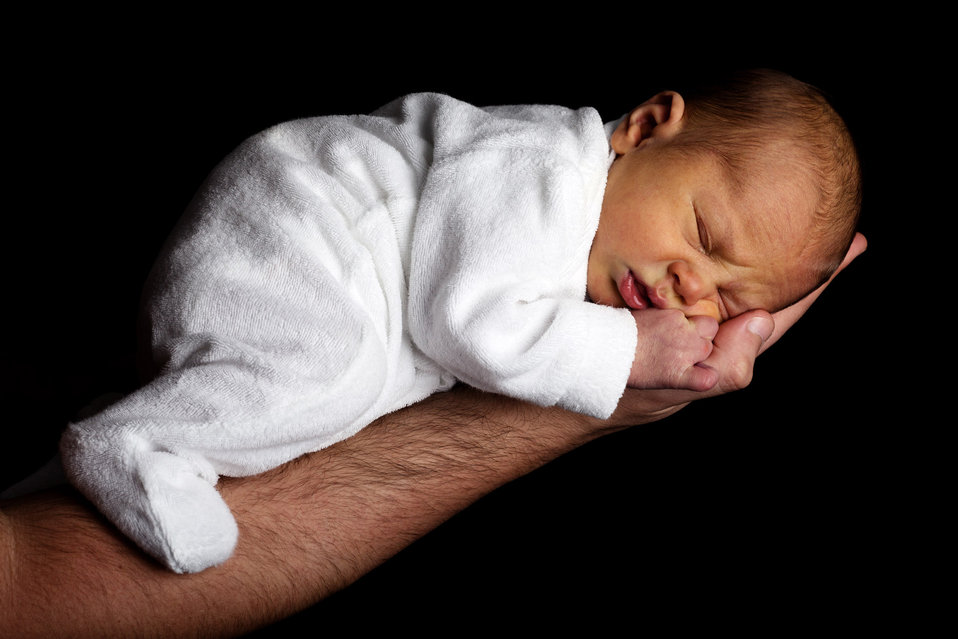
Newborn baby on an arm on dark background.